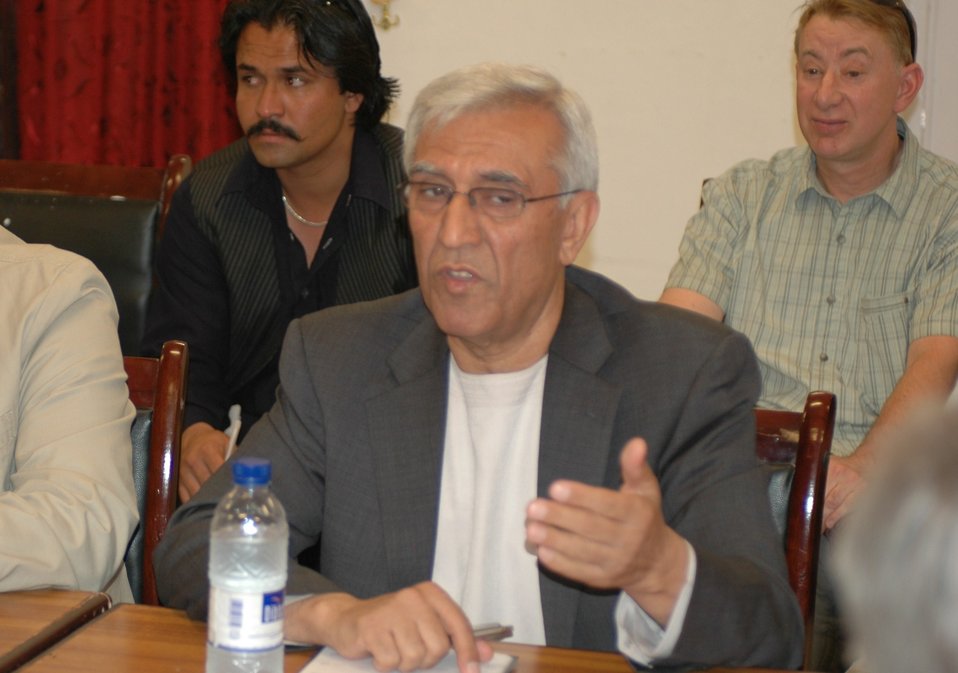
Dr Shah Visits Kandahar April 9, 2010